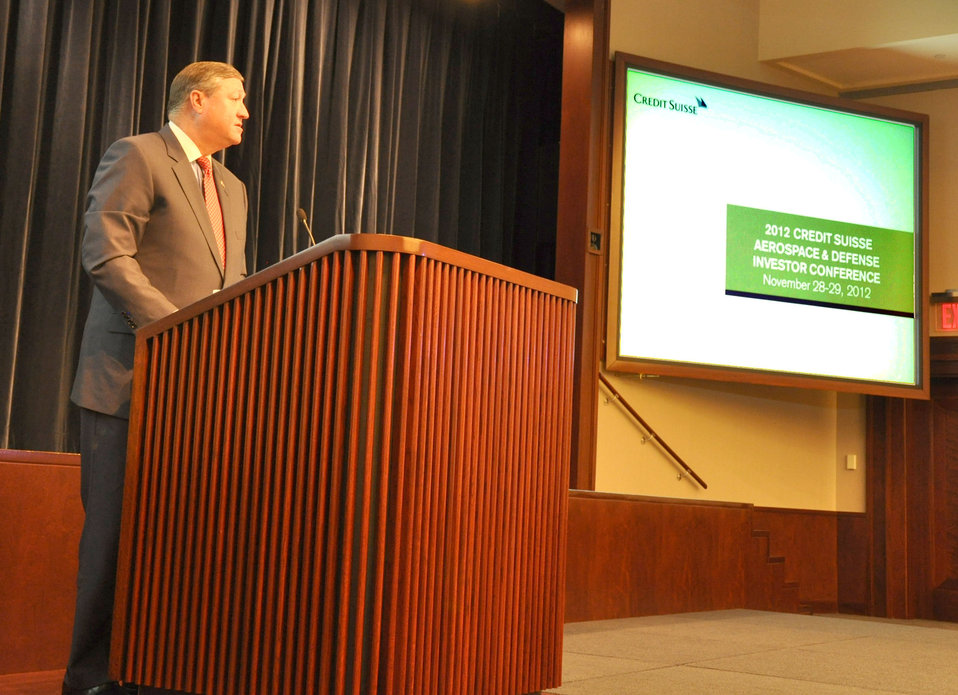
Modernization and challenges

Secretary of the Air Force Michael Donley discusses the importance of modernization and the challenges ahead for the Air Force at the 2012 Aerospace and Defense Investor Conference in New York, Nov. 29.2012.